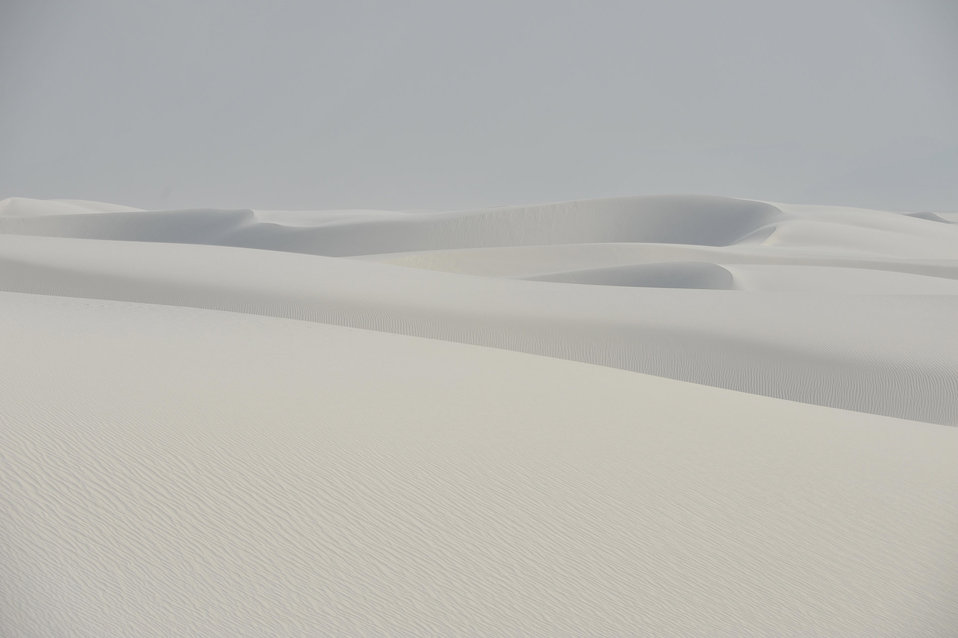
White sands 4

White sands national monument,new mexico.